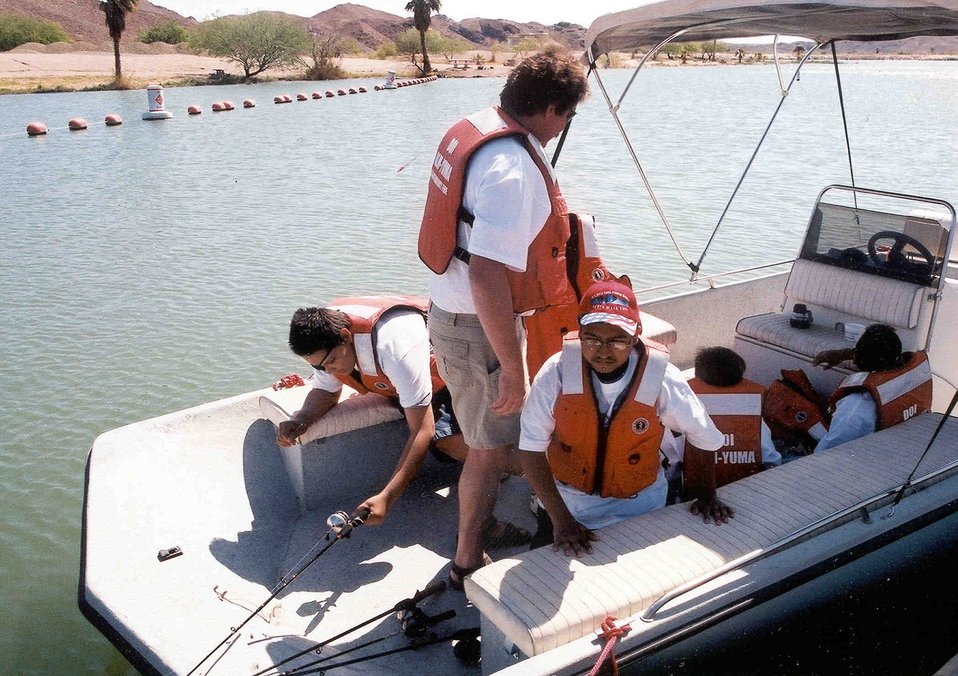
Mentally and physically challenged young people enjoying a day fishing and boating in celebration of National Fishing and Boating Week.